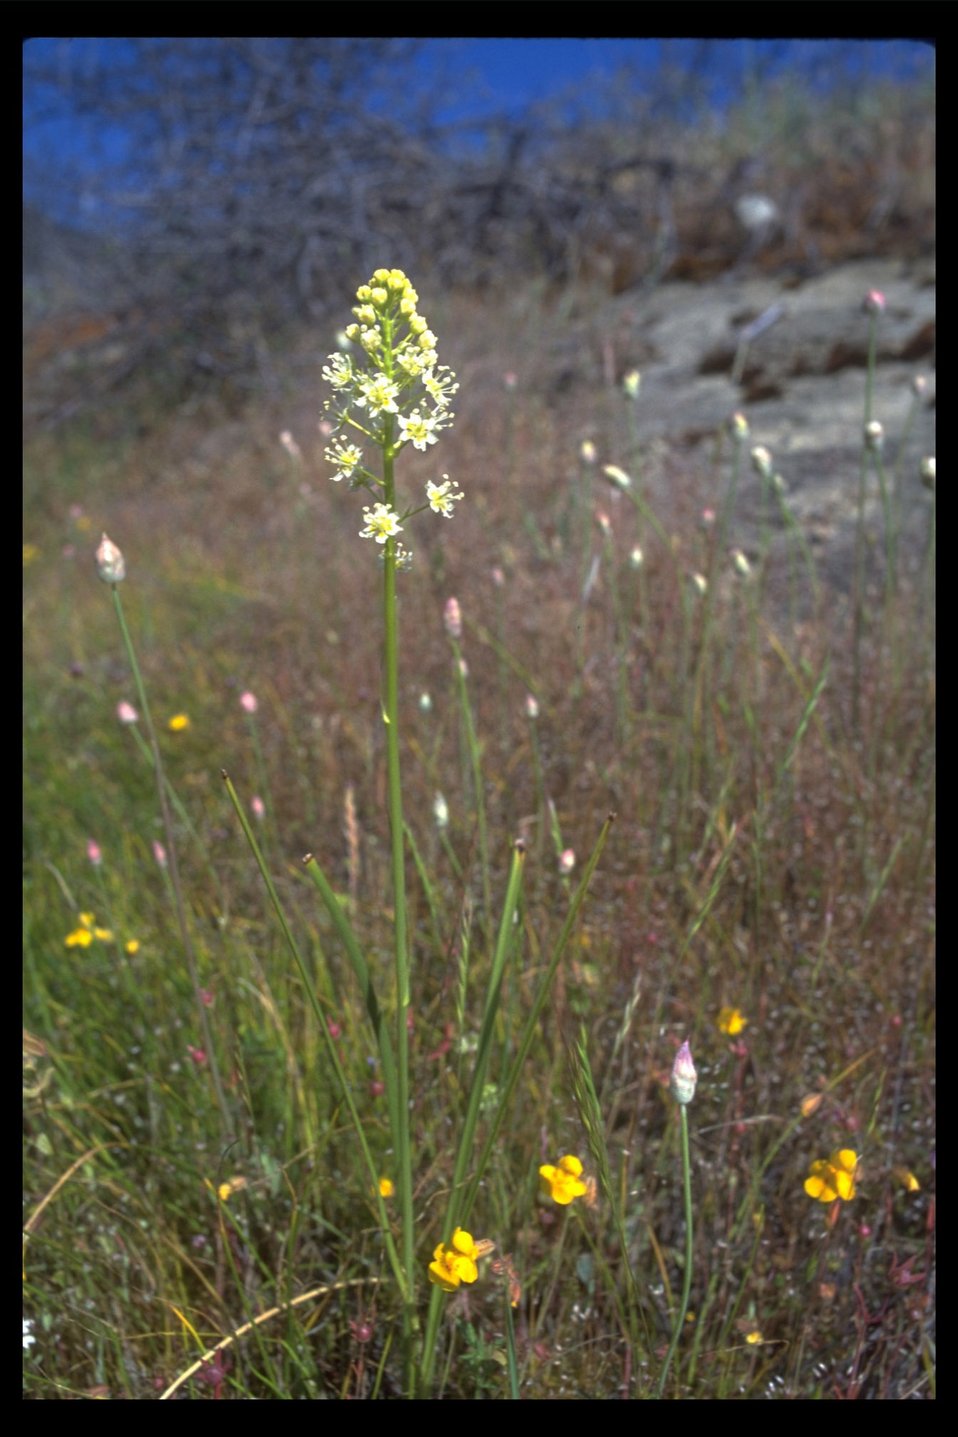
Death Camas (Zigadenus venenosus) near the trailhead at Upper Table Rock.